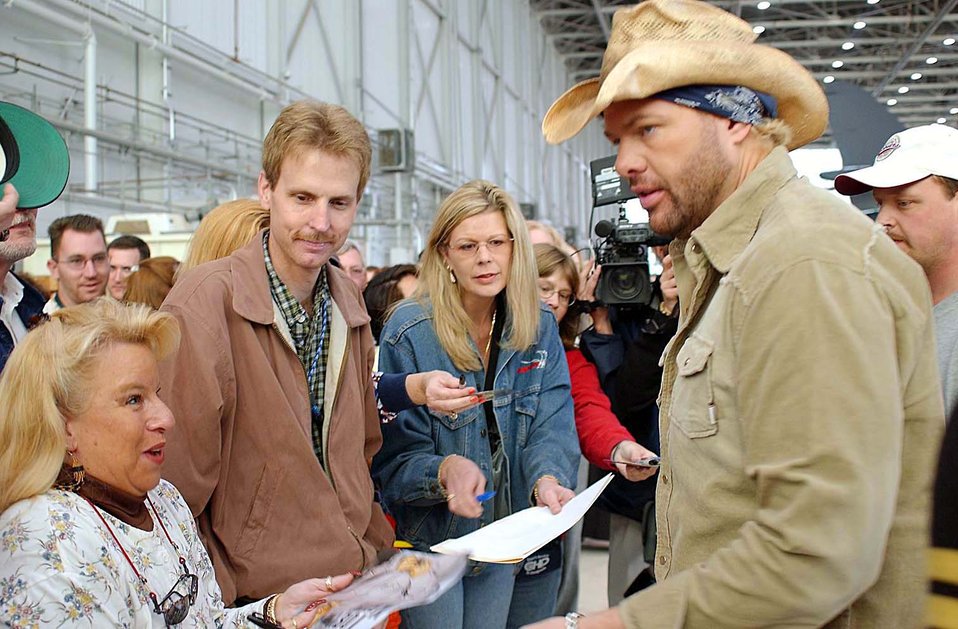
For the fans

EDWARDS AIR FORCE BASE, Calif -- Toby Keith visits with fans here during a visit Nov. 17. A crowd of about 400 filled a hangar to meet the country-music star. Keith was at Edwards to film his new video,